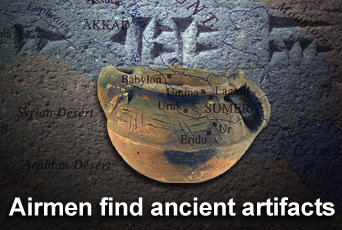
Airmen find ancient artifacts

An Airman and his team discovered fragments of pottery, possibly dating back as far back as 2,000 years during a recent job at Kirkuk Air Base, Iraq.